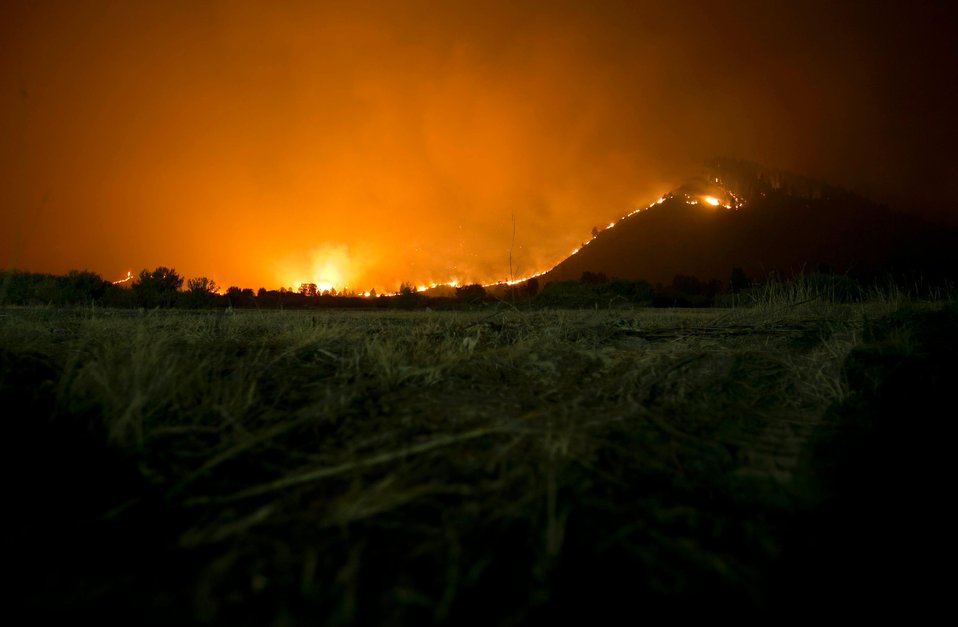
The Elk Complex Fire in the Boise National Forest near Pine, ID began on Aug. 08, 2013 by lightning has consumed approximately 98,413 acres and is approximately 5% contained.